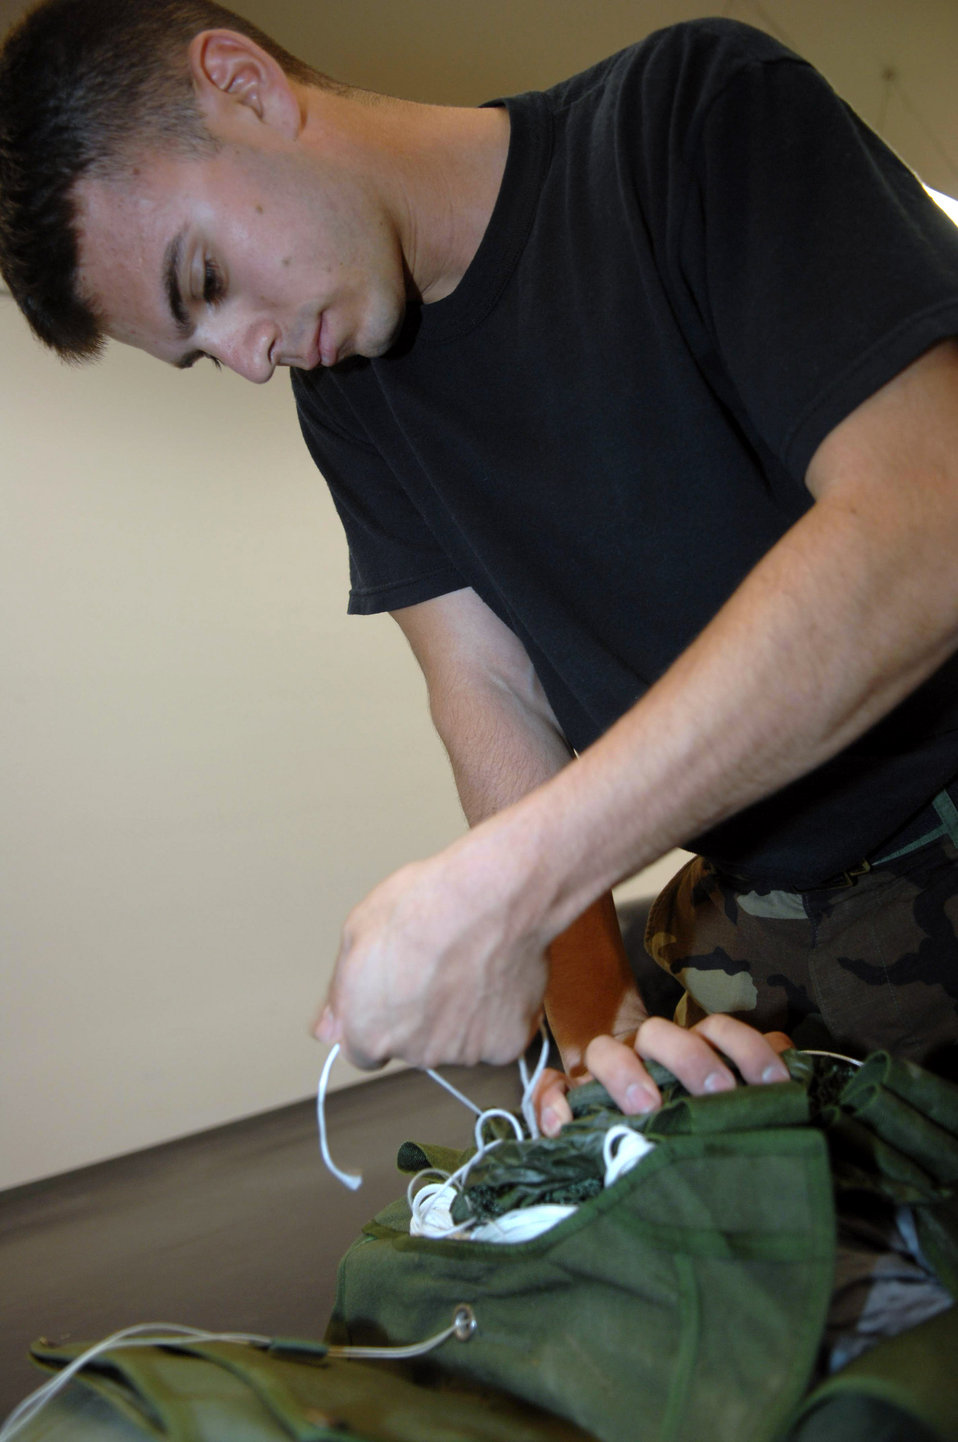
Aircrews depend on these Airmen

Senior Airman Isaac Shapiro packs a parachute June 25 at Davis-Monthan Air Force Base, Ariz. Airman Shapiro is an aircrew flight equipment journeyman assigned to the 563rd Operation Support Squadron where he maintains parachutes for pararescuemen, along with other types of survival equipment.